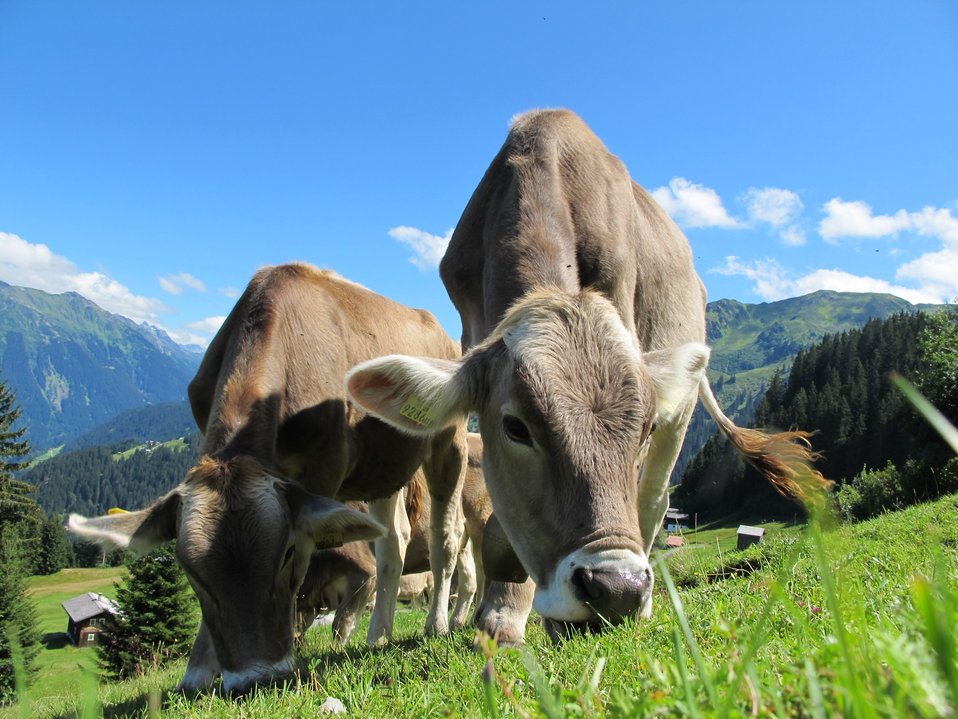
Cows cow pasture austria

Cows on pasture in austria blue sky landscape.